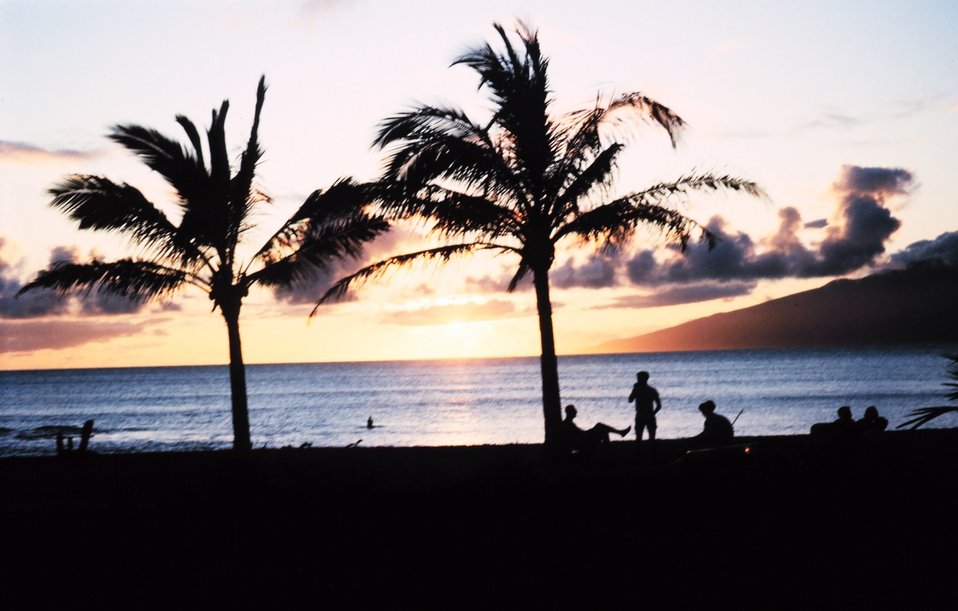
Napili Bay